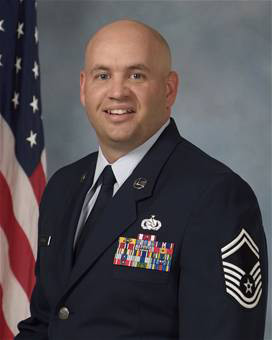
12 Outstanding Airmen of the Year named

Senior Master Sgt. Jeffery Steagall from Peterson Air Force Base is a communications and information systems inspections manager assigned to the Office of the Inspector General for Headquarters Air Force Space Command. The Air Force Chief of Staff reviews the selections. The selections for the 2009 12 Outstanding Airmen of the Year were announced July 2 by Air Force officials at Randolph AFB, Texas.